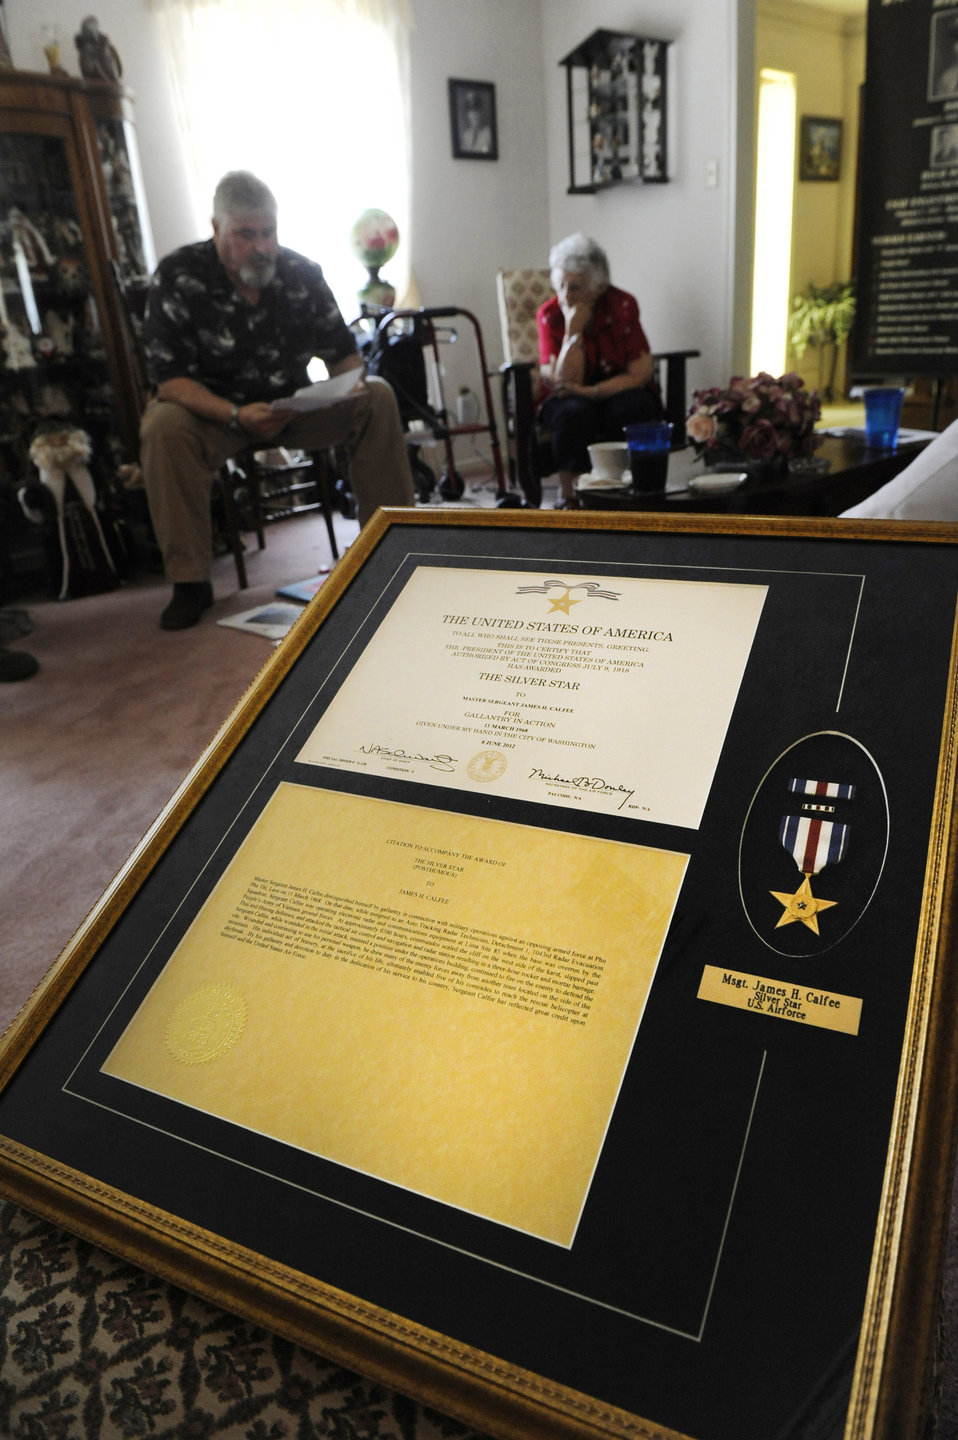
Silver Star hero

A framed Silver Star Medal and citation sits in the foreground as Rosalie Bacicia, back right, sister of the late Master Sgt. James Calfee, and Delton Kayga, a brother-in-law, look at documents about Calfee in Houston, Texas, Aug. 22, 2012. Calfee, who was posthumously awarded the Silver Star Medal, was killed in action in Laos in 1968.